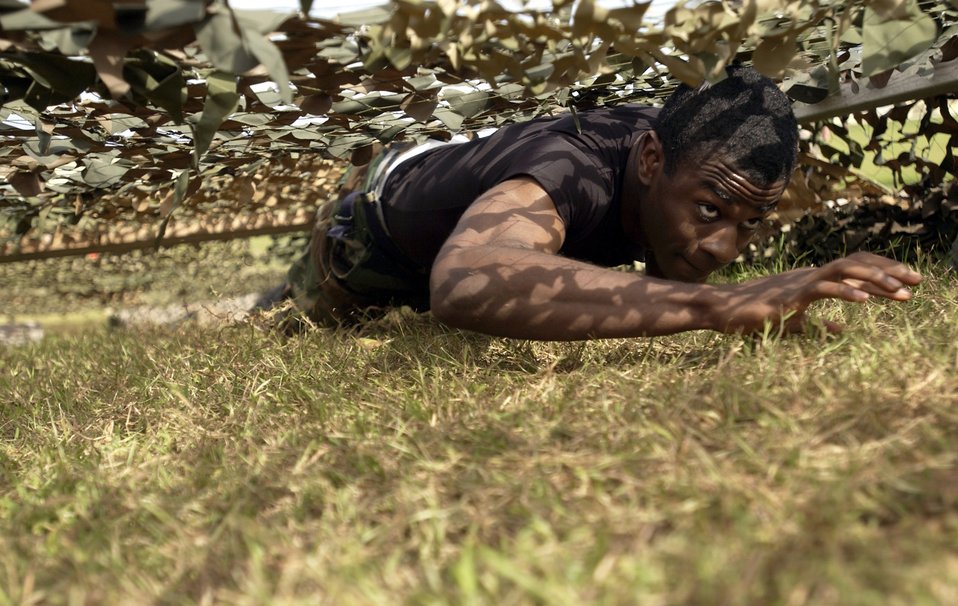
Warrior Day

ANDERSEN AIR FORCE BASE, Guam -- Senior Airman Christopher Berry maneuvers through an obstacle course during Andersen's annual Warrior Day Challenge here recently. The event challenges teams from different squadrons in six events testing physical fitness, self-aid buddy care, gas mask donning, weapons assembly, an obstacle course and knowledge of the Airman's Manual. Airman Berry is assigned to the 36th Communications Squadron.